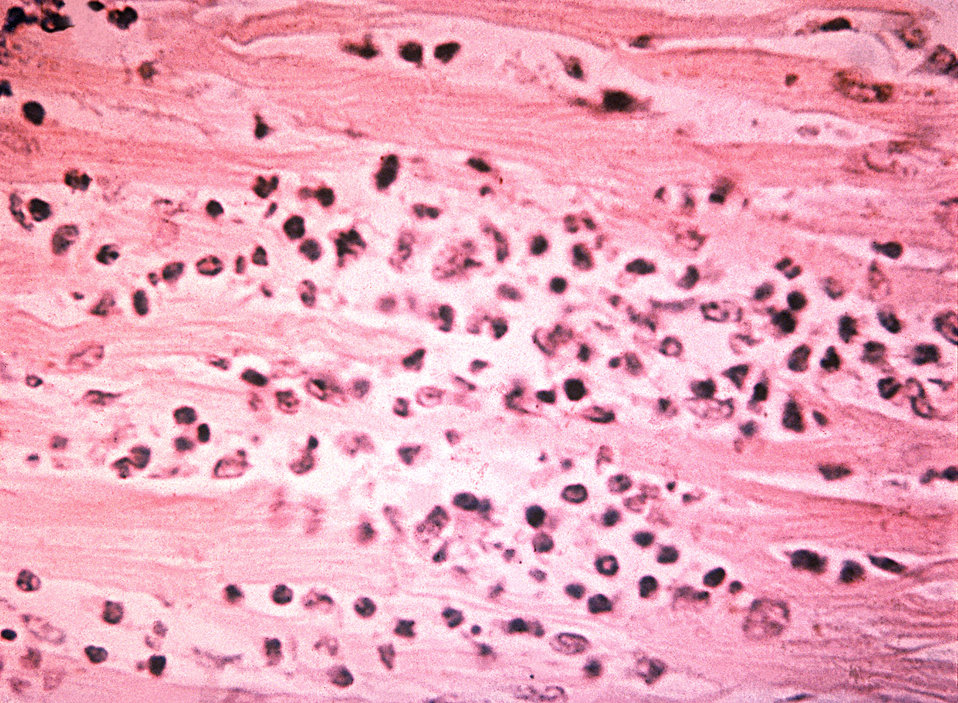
A photomicrograph revealing histopathologic changes in the myocardium in a case of typhoid fever.